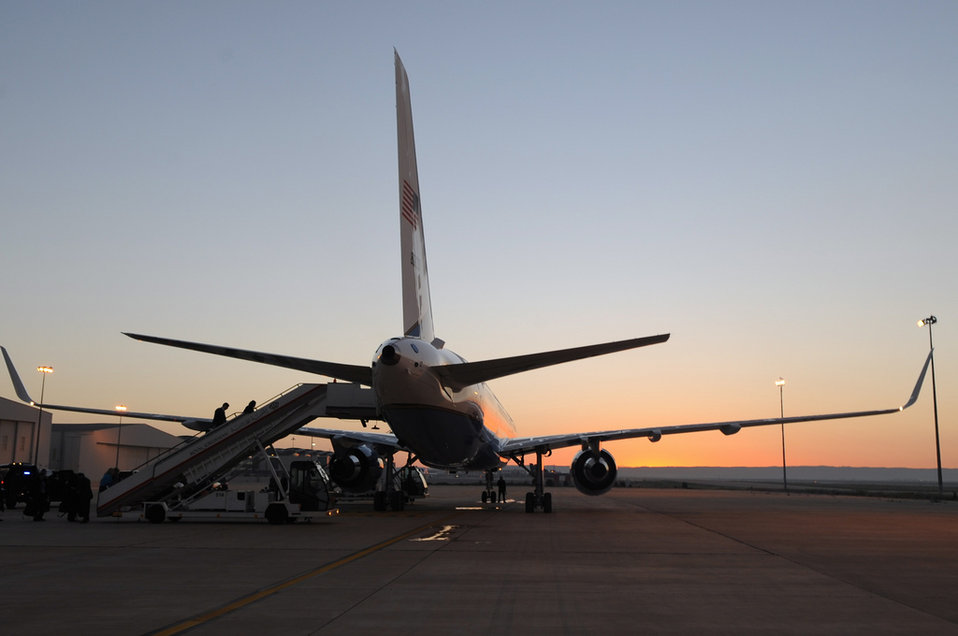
Passengers Board Secretary Kerry's Airplane for Sunrise Flight to Rome

Passengers board the Air Force C-32A carrying U.S. Secretary of State John Kerry on a sunrise flight from Amman, Jordan, to Rome, Italy, on March 27, 2014.